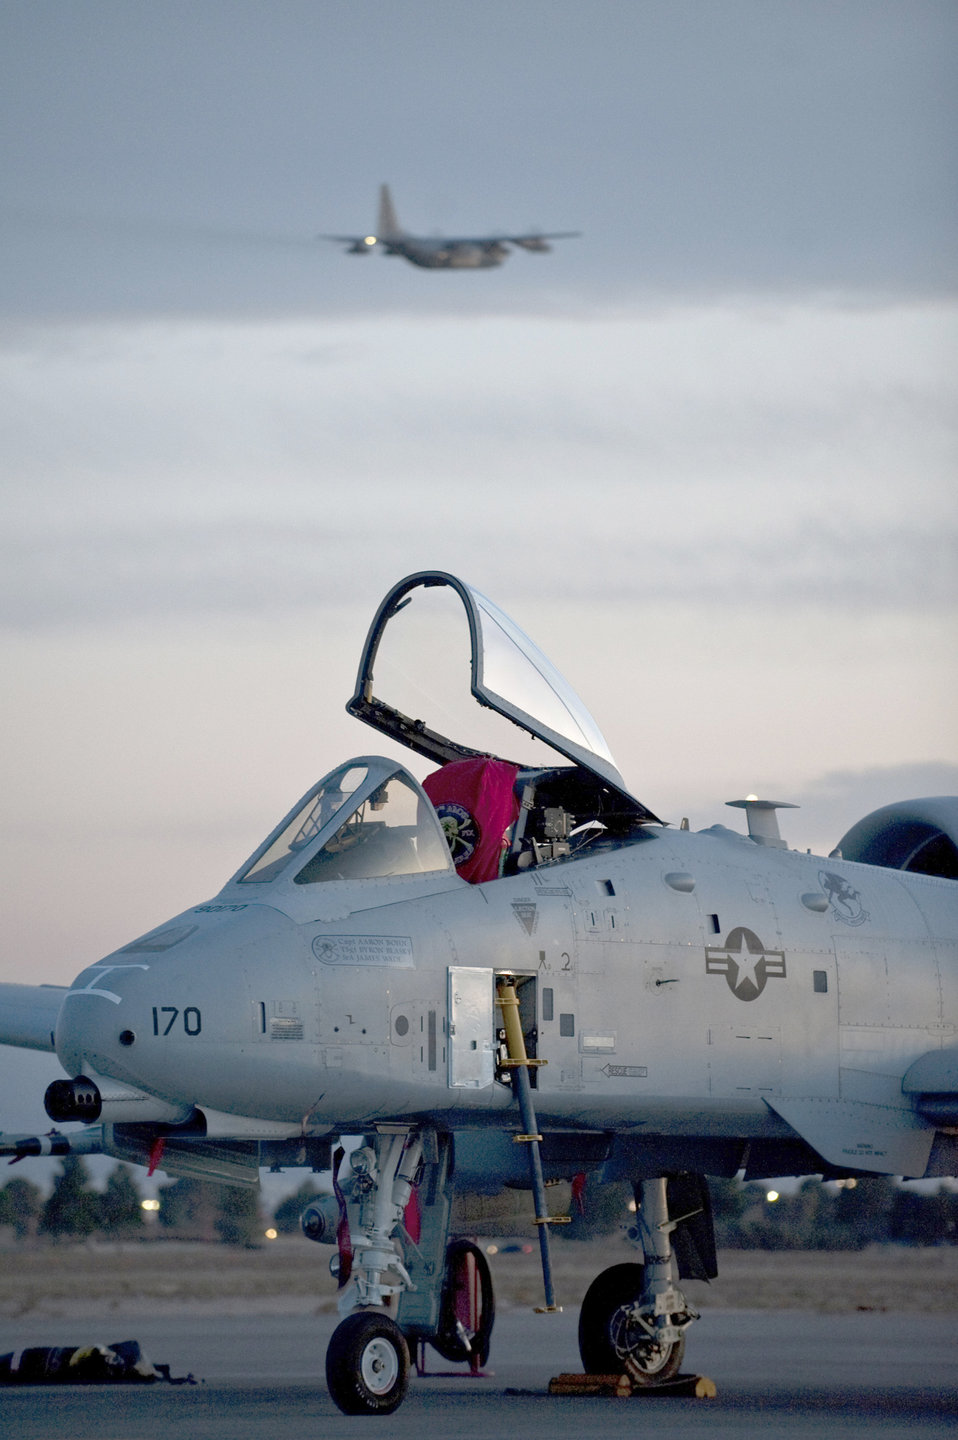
Red Flag 11-3

An A-10 Thunderbolt II sits Feb. 24, 2011, on the flightline at Nellis Air Force Base, Nev., while a Royal Australian Air Force C-130 Hercules departs overhead for a training mission during exercise Red Flag.